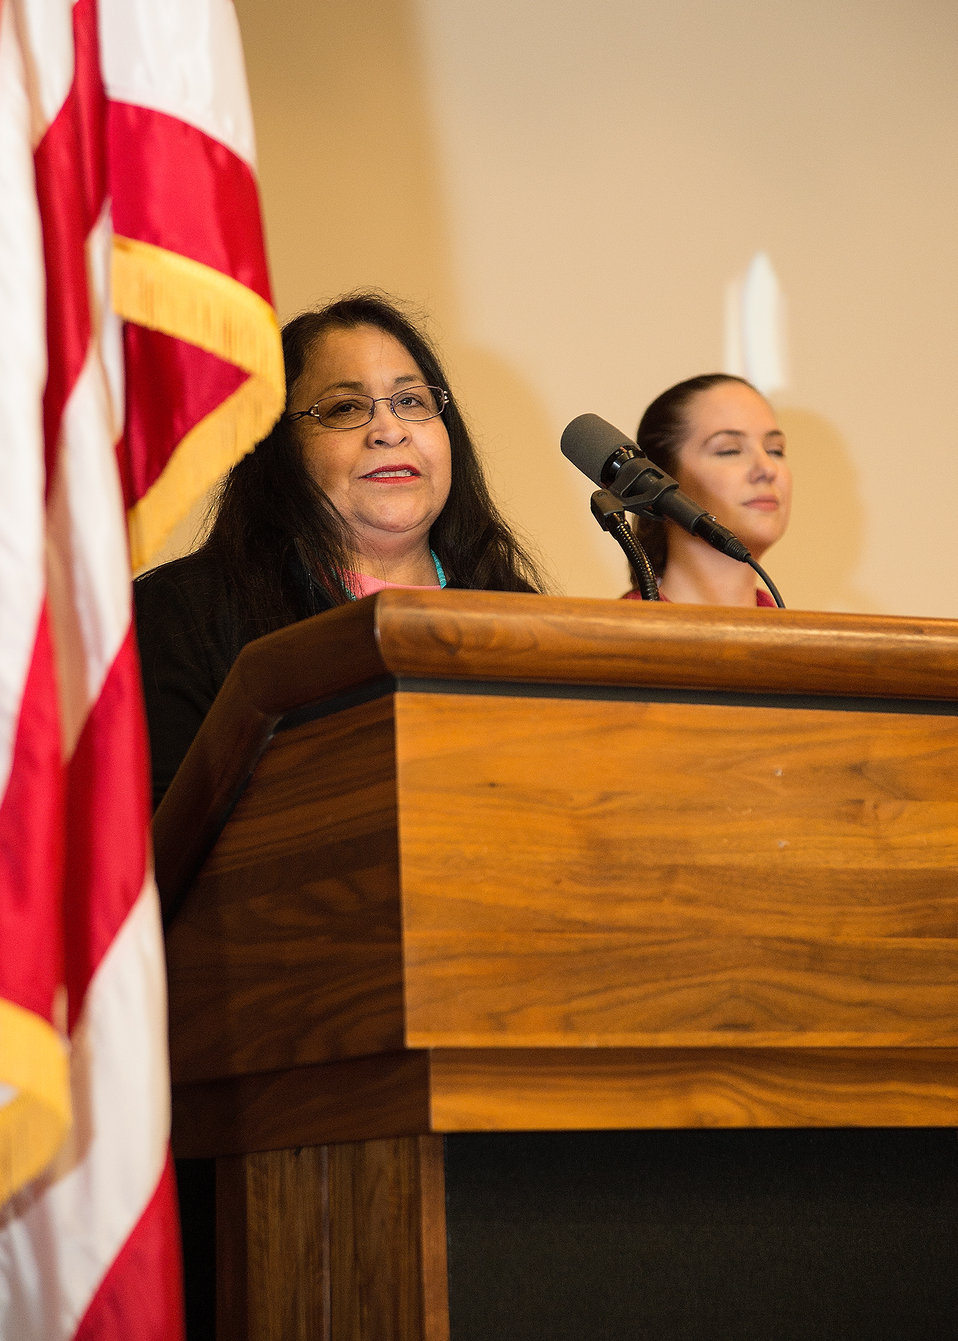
U.S. Department of Agriculture (USDA) Food Safety and Inspection Service (FSIS) Tribal Government Relations Specialist Beatrice Herbert recites the Pledge of Allegiance in two languages English and Navajo at USDA's Dr. Martin Luther King Jr. and National Service Day in Washington, D.C. on Wednesday, Jan. 15, 2014.